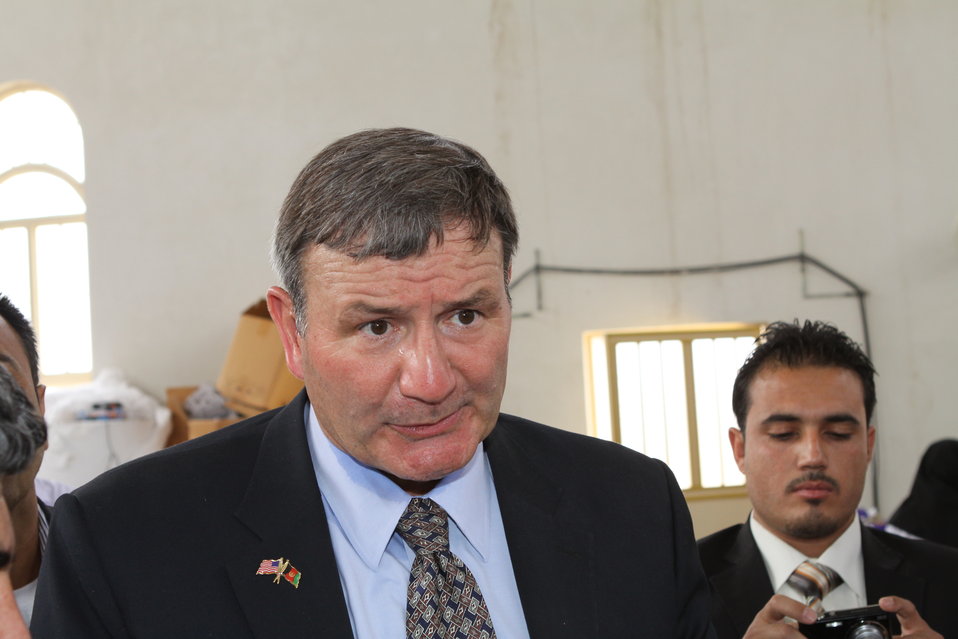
100525 Hirat Marble Conference 817